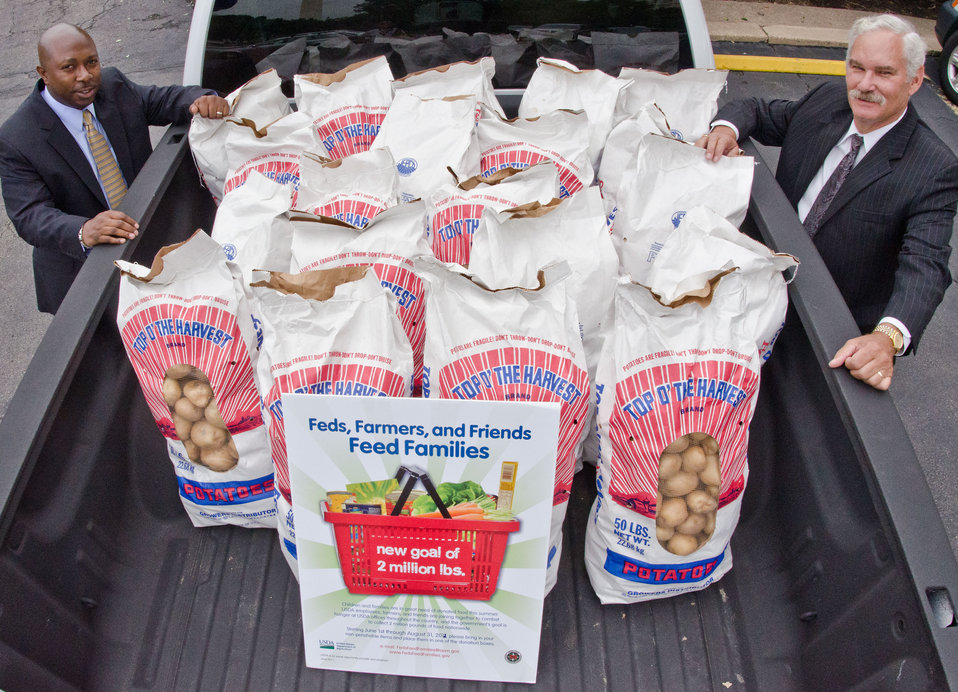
Agriculture Under Secretary Farm and Foreign Agriculture Service (FFAS) Michael Scuse (right) donates 1,000 pounds of potatoes to DC Central Kitchen, for the Feds Feed Families Food Drive, on Monday August 20, 2012 in front of the Agriculture headquarters in Washington, D.C. FFAS Deputy Under Secretary Karis Gutter (left) helped with the transfer of 20 50-pound bags. Under Secretary Scuse, a farmer himself purchased and loaded his pick-up this weekend with half a ton of potatoes at nearby Wicks farm, in Delaware. Secretary Scuse farms 1,700 acres of corn, soybeans and wheat. He says that this is the first of many more donations this year.